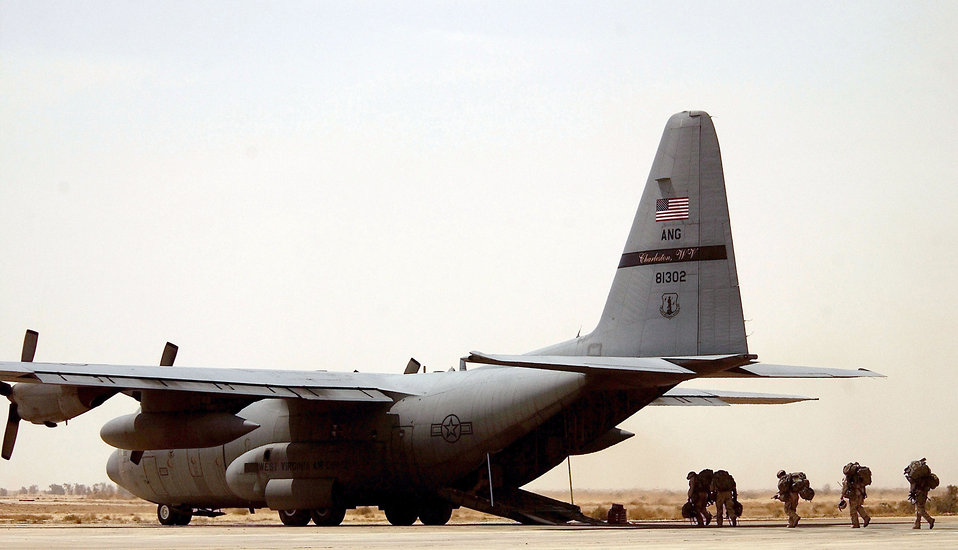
Time to go

OPERATION IRAQI FREEDOM -- Army soldiers board a C-130 Hercules at an undisclosed location on April 4. The Army is deployed here in support of Operation Iraqi Freedom. Operation Iraqi Freedom is a multi-national coalition effort to liberate the Iraqi people, eliminate Iraq's weapons of mass destruction and bring an end to the regime of Saddam Hussein.